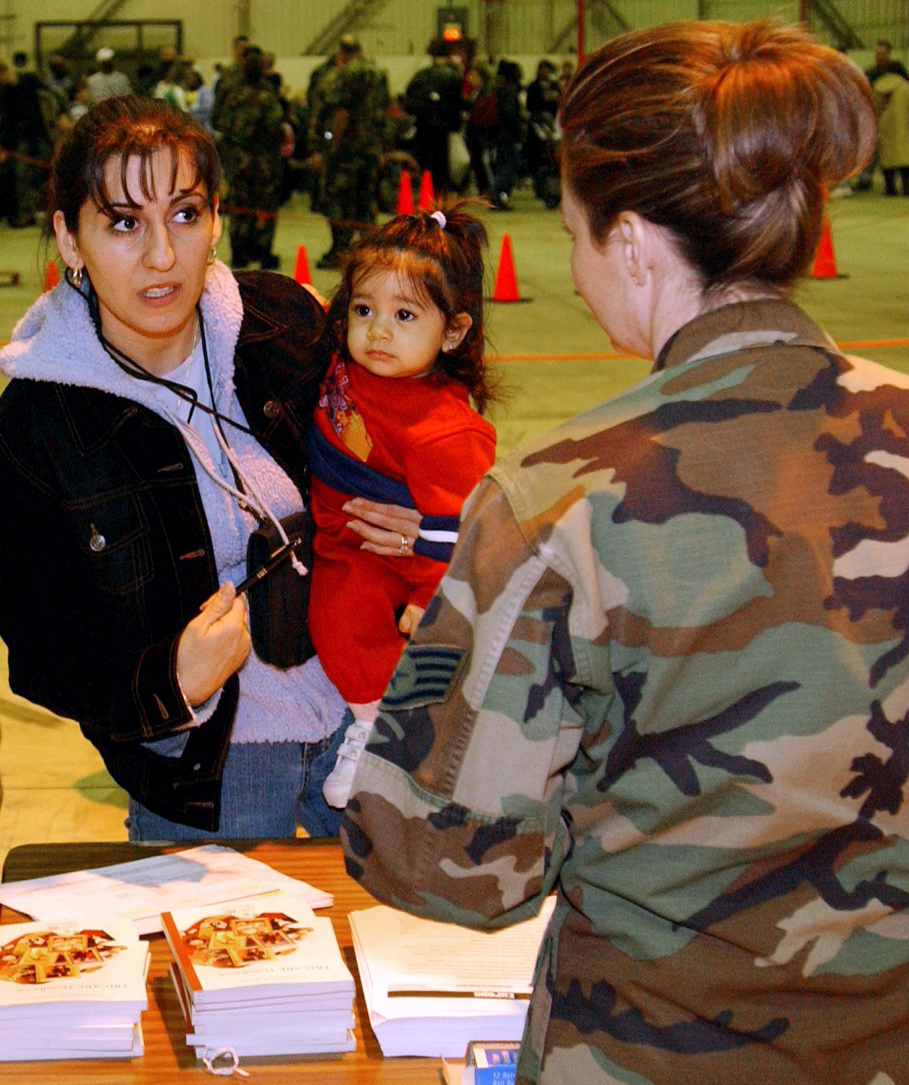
Processing line

INCIRLIK AIR BASE, Turkey -- Family members of 39th Wing airmen go through a processing line March 19 as part of Incirlik's voluntary dependent relocation. Representatives from various base agencies helped approximately 320 dependents leave the base. The first aircraft left Incirlik at 4:30 p.m. March 20.